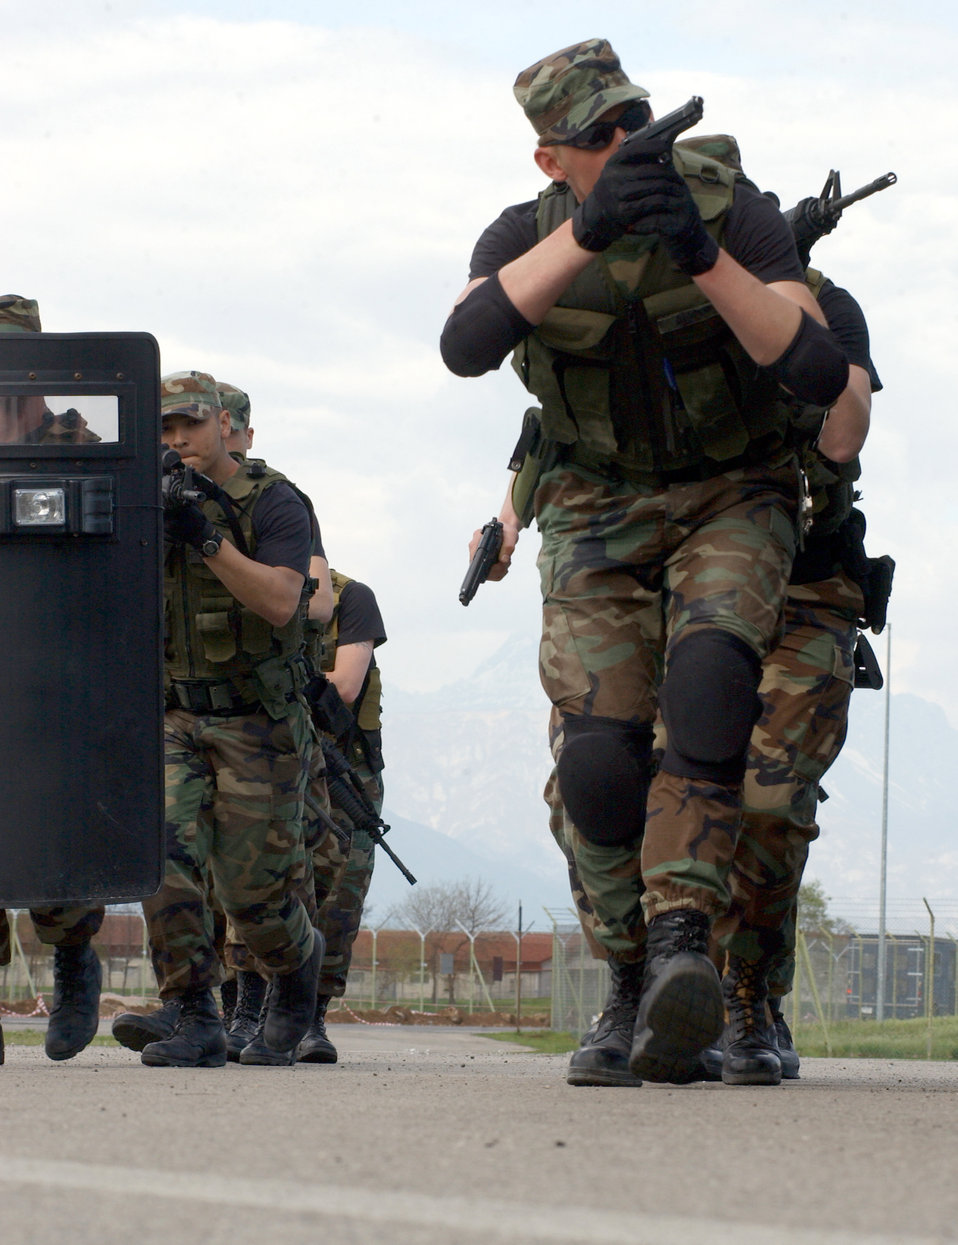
Joint tactics

AVIANO AIR BASE, Italy -- Security forces Airmen with the 31st Security Forces Squadron conduct vehicle assault training as part of a joint-tatics training course here April 21. The week-long course was developed to establish a better working relationship between members of the Office of Special Investigations, the 31st SFS, and the Italian air force carabinieri.